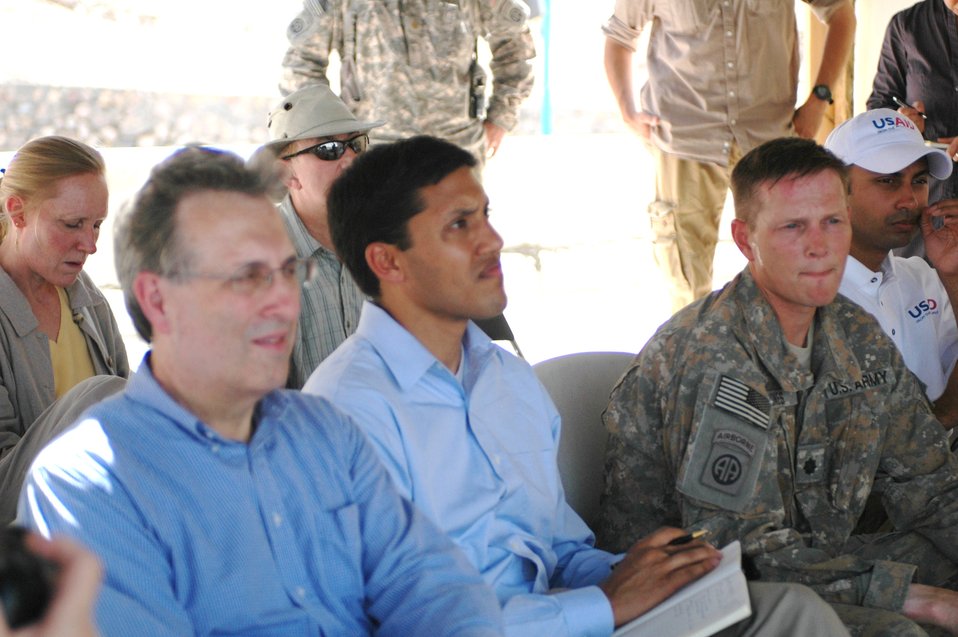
Dr Shah Visits Kandahar April 9, 2010